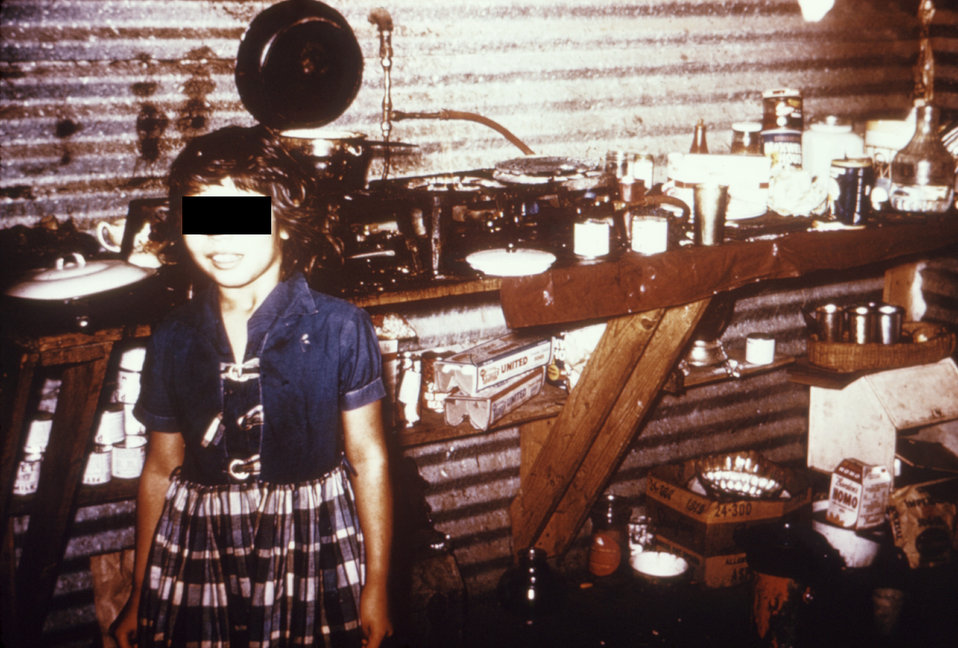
This was part of a series used to familiarize public health inspectors with sanitation conditions in migrant worker camps.